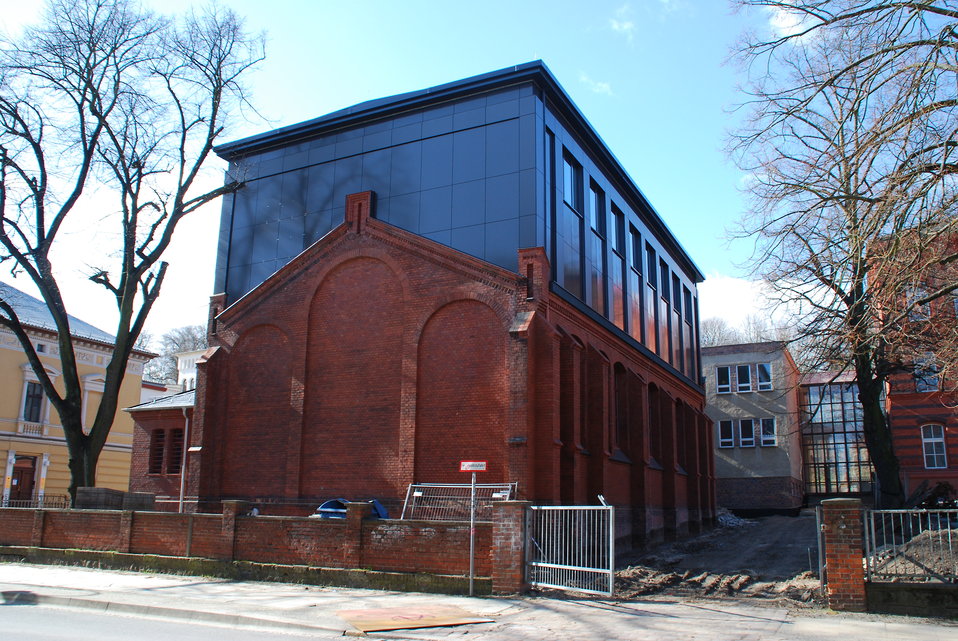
Abriss Bahnhofstunnel Frankfurt (Oder) Ehemaliges Friedrichsgymnasium Turnhalle um ein Stockwerk aufgestockt